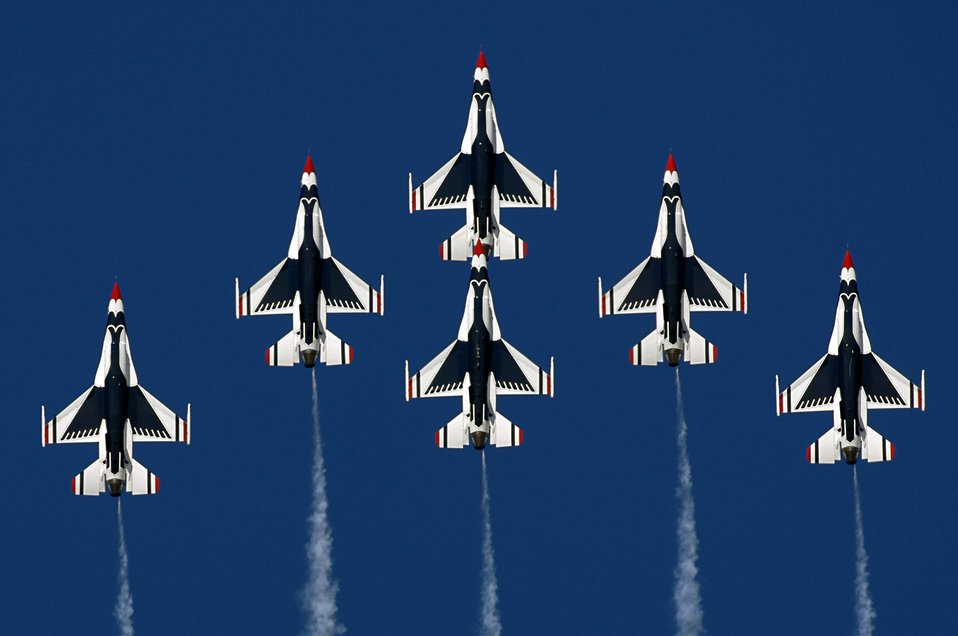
Raptor, Thunderbirds fly over California

The Air Force Thunderbird Delta formation goes vertical while performing the Delta Loop during a March 31 air show at Naval Base Ventura County in Point Mugu, Calif. The pilots perform approximately 30 maneuvers in a demonstration.